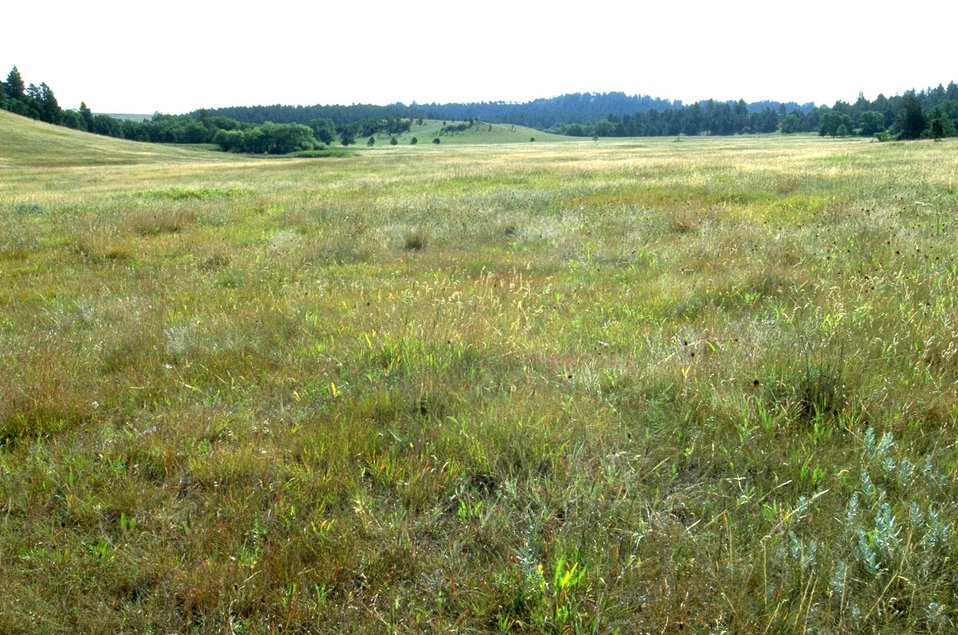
Grassland with Ponderosa Pine in the background